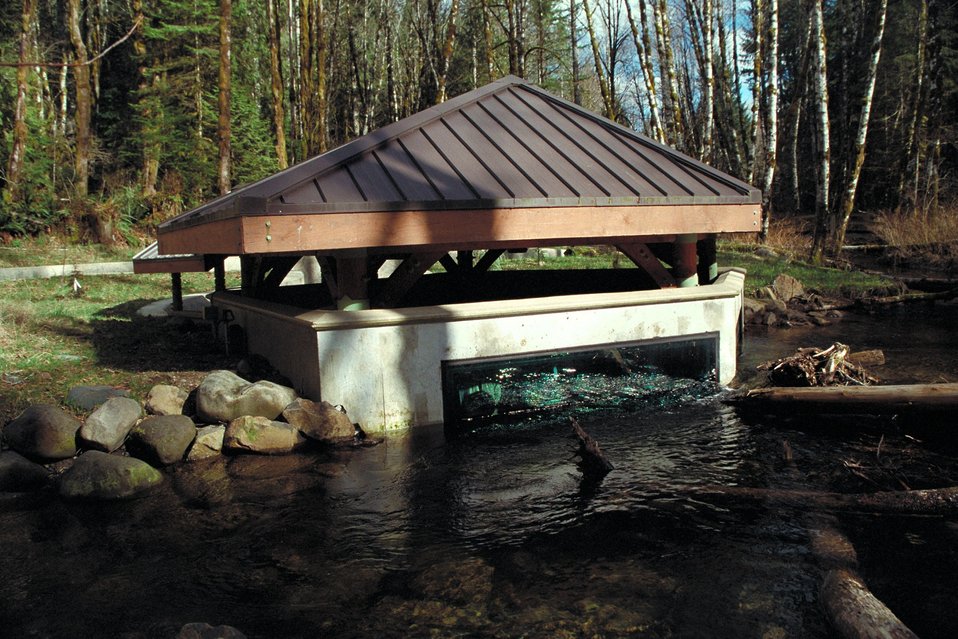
Cascade Stream Watch is an environmental education program conducted at BLM's Wildwood Recreation site.